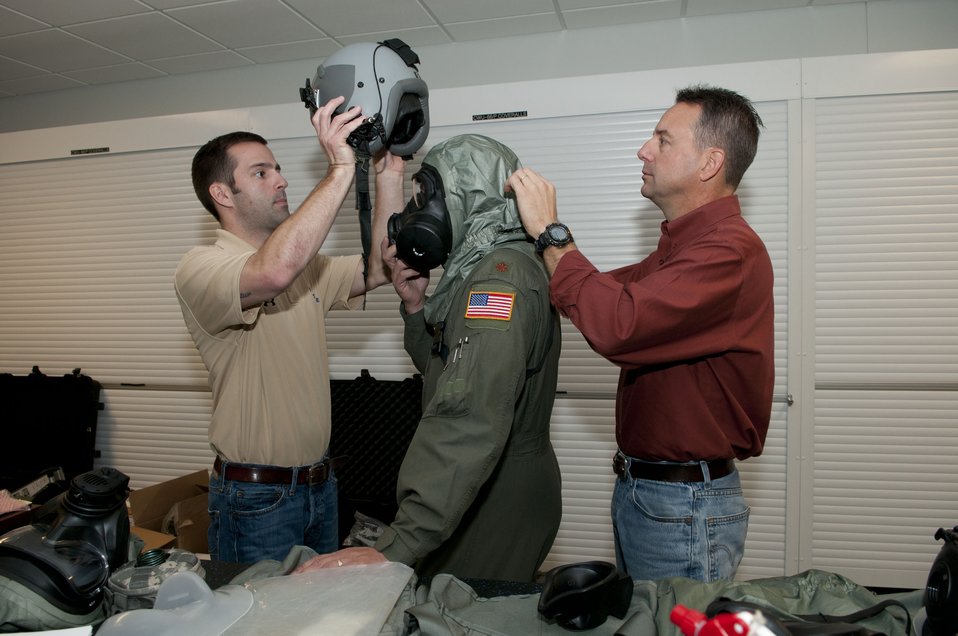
167th AW provides testing ground for mask development

Steve Leadore and Kevin O'Neal, both Joint Service Aircrew-Fixed Wing Research Team members, assist Maj. Jeff Musser, a pilot for the 167th Airlift Squadron, don equipment during an assessment of the equipment at the West Virginia Air National Guard in Martinsburg, W.Va., Dec. 7, 2011. A Department of Defense research team working on the development of a joint service aircrew mask conducted field assessments at the 167th Airlift Wing.